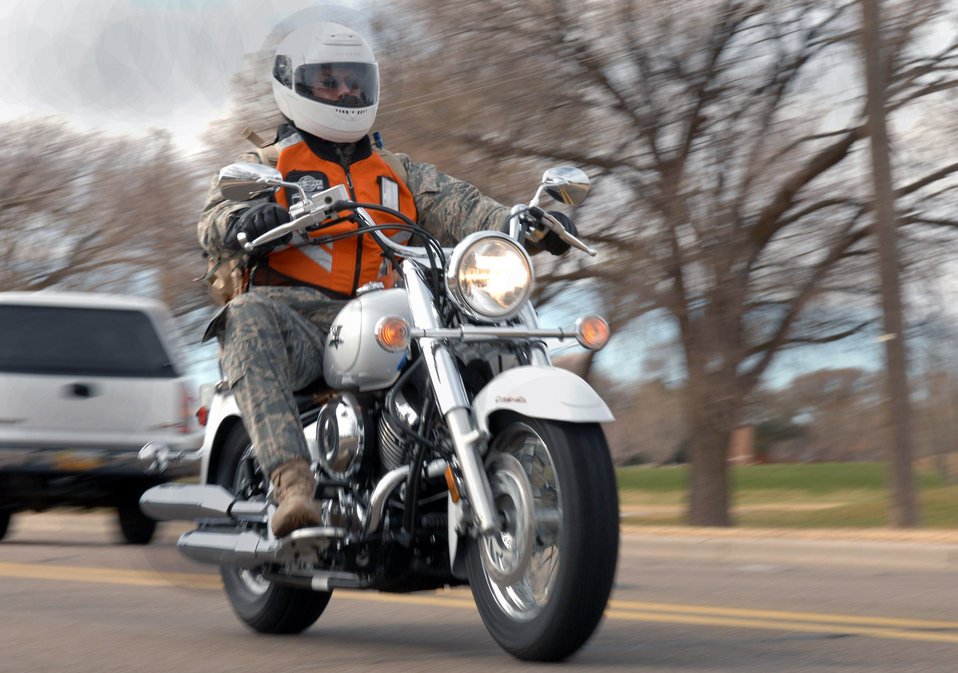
Bikers roll out meals on wheels

Maj. Ryan Rowe rides toward the Clovis Food Bank Dec. 6 in New Mexico. Major Rowe is the 27th Special Operations Component Maintenance Squadron commander and rmember of the motorcycle riders group at Cannon Air Force Base, N.M. The group took donated food to the food bank to share in the holiday spirit.